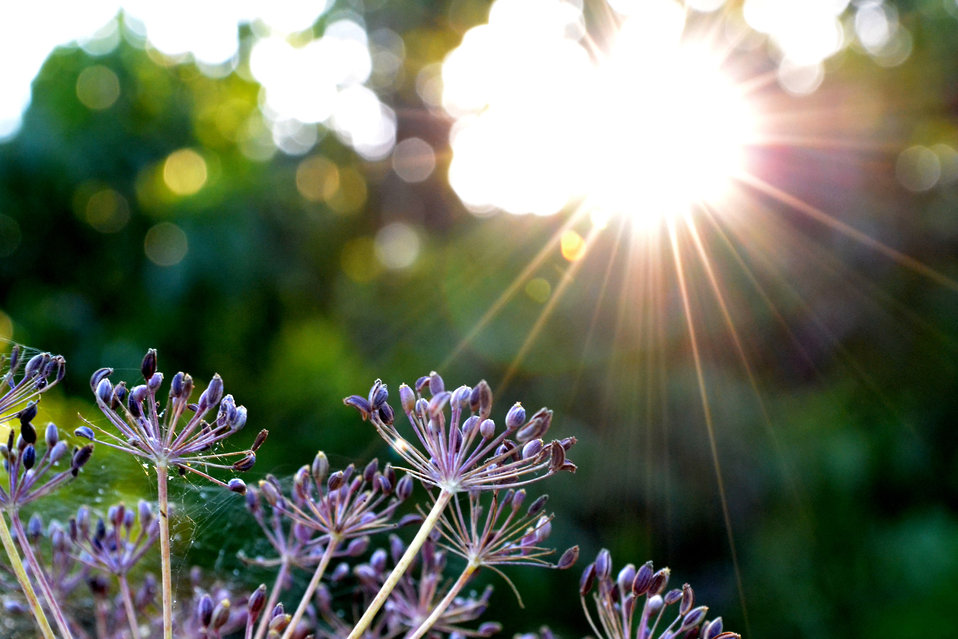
Sun and nature

Abstract picture.